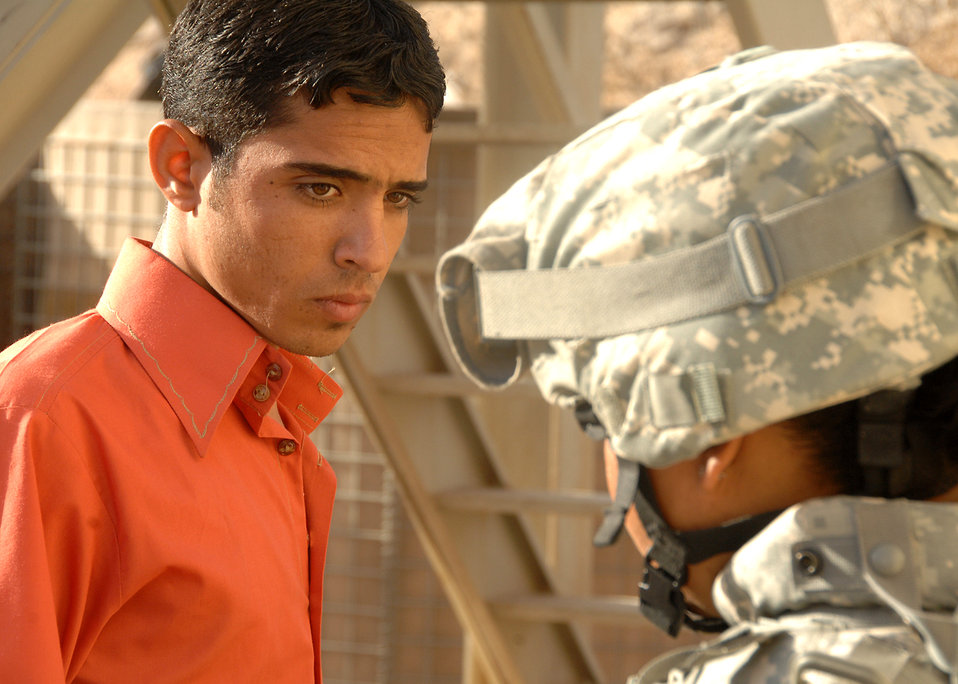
Airmen play goodwill role at Camp Bucca

An Iraqi man waits for permission to proceed through a security checkpoint manned by Senior Airman Naomi Espinoza Oct. 4 at Camp Bucca, Iraq. The 586th AEG provides security for the camp's visitation center, where nearly 400 visitors are allowed to visit daily with detainees being held at the theater internment facility. Airman Espinoza is assigned to the 586th Air Expeditionary Group.